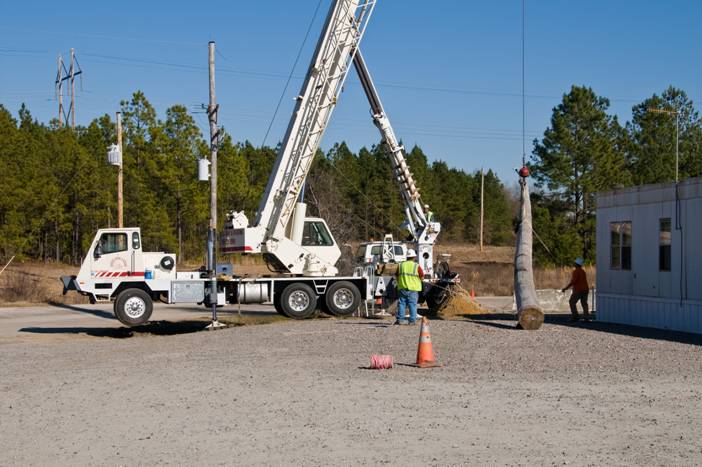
Half-century Old Reactor Gets “Wired” for Technology

After more than a half-century since its construction, Savannah River Site’s (SRS) R Reactor has taken a leap forward with the introduction of a local wireless Intranet service, even as it undergoes final closure.
The system, known as SRSnet, is used for radiological data collection, time-keeping, safety documentation, and other essential business needs. Prior to the installation of the Intranet Access, 17 teams were required to report to P Area, approximately two miles away, twice daily, for radiological control accountability using software that could only be accessed via the SRSnet.